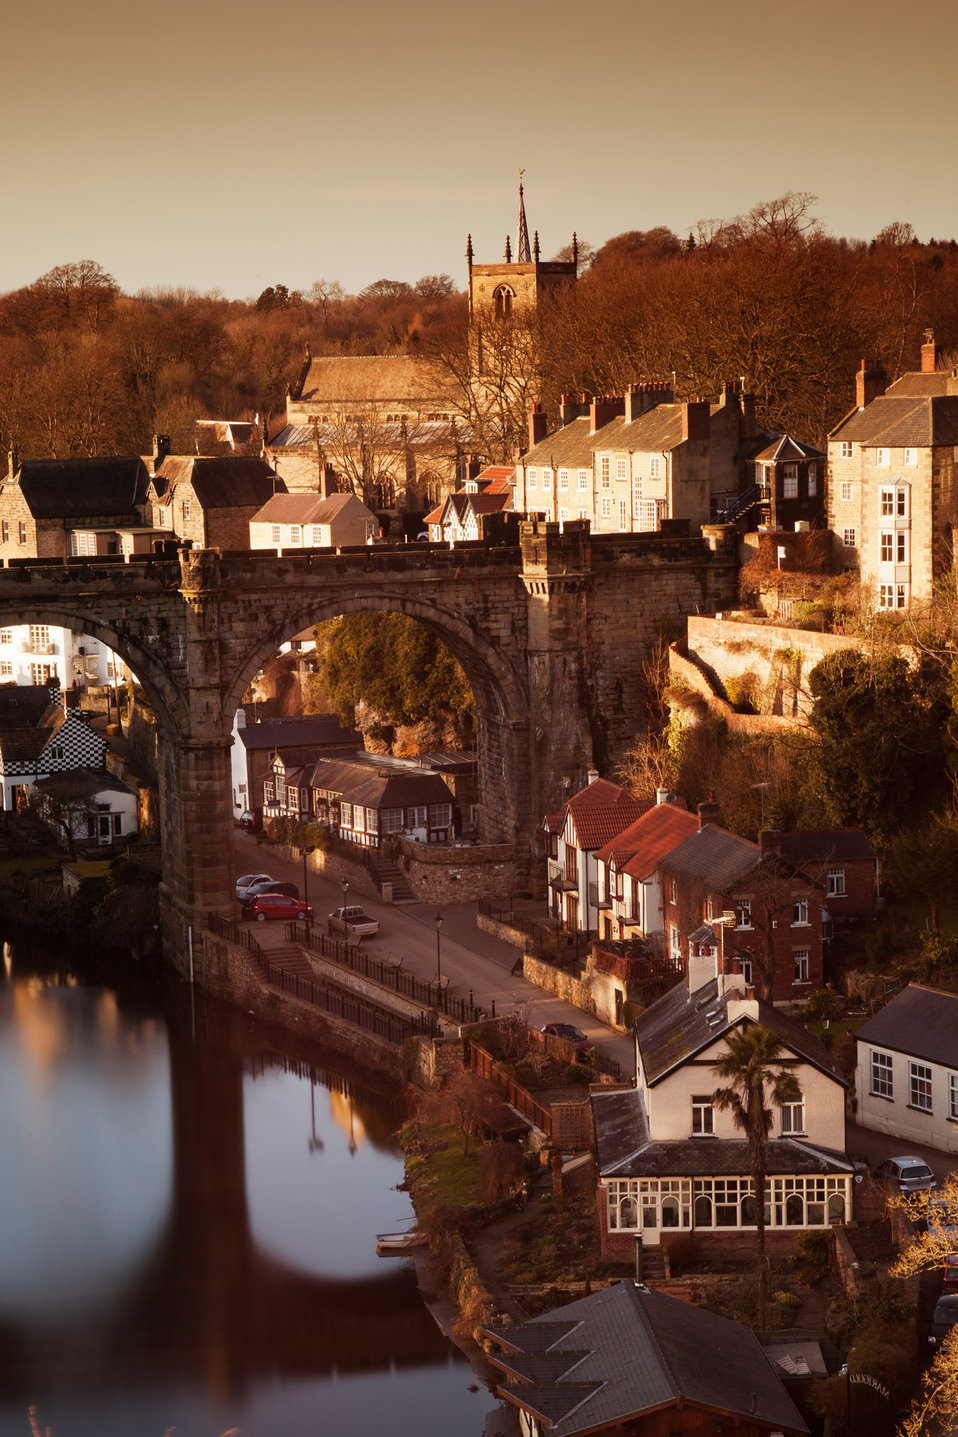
Knaresborough village at sunset in north yorkshire - england.